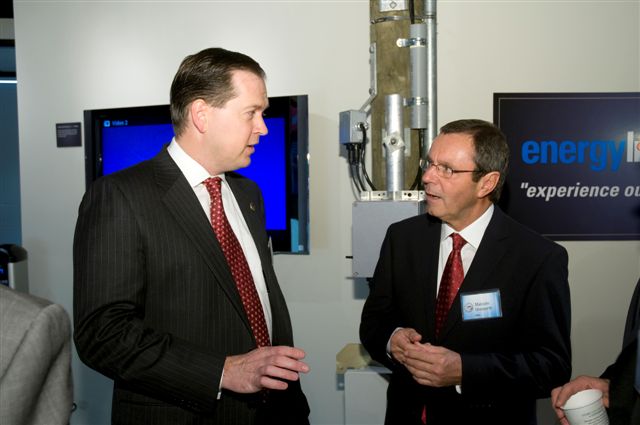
Chris Irwin and Malcolm Unsworth discuss CenterPoints Smart Grid Investment Grant